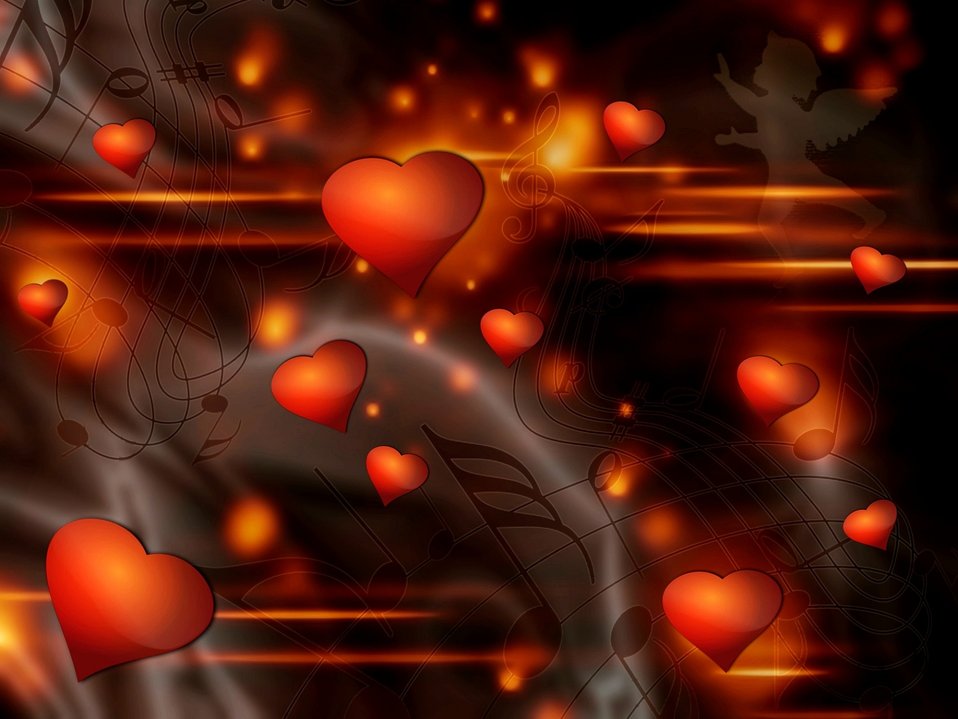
Background 790

Background.